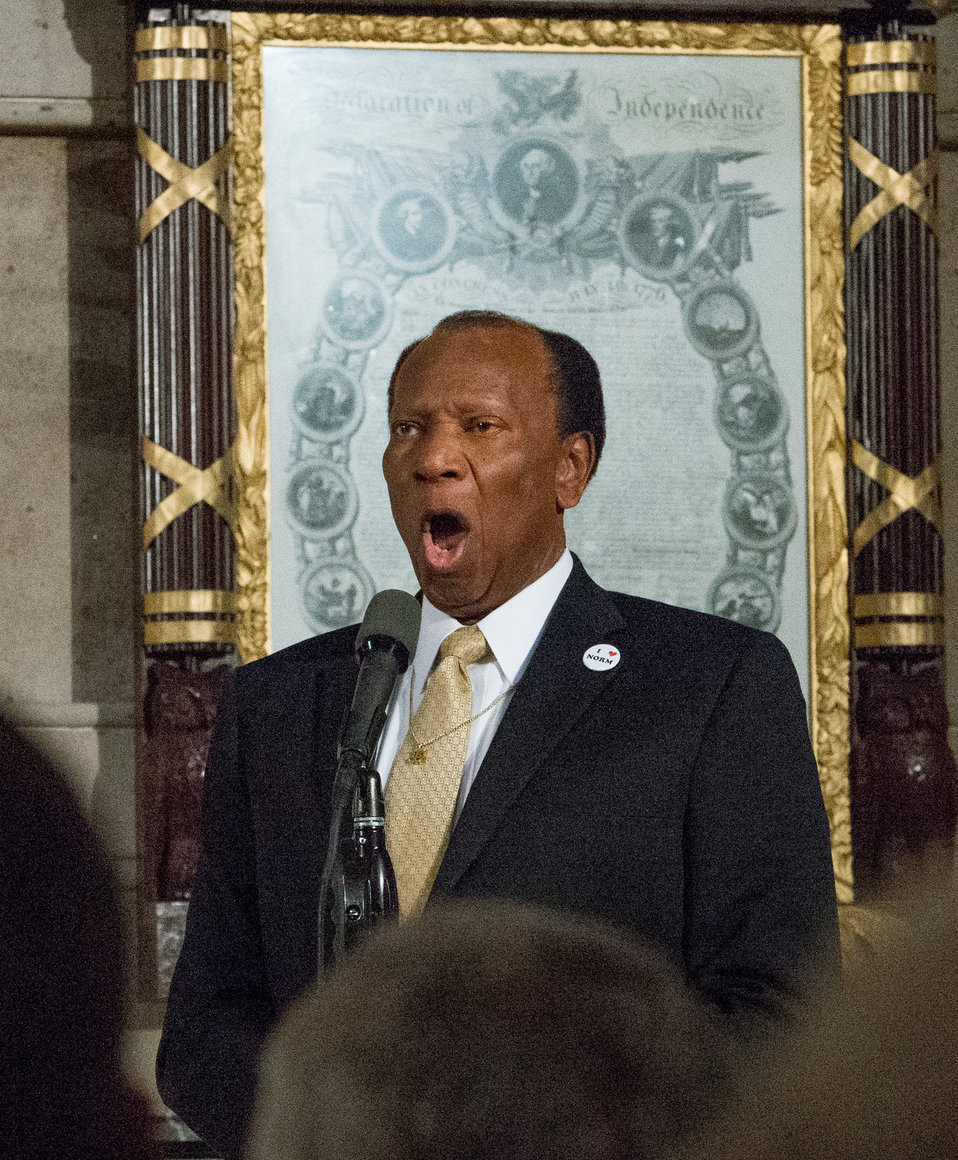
Mr. Simon Estes sings “Climb Every Mountain,” during the dedication of the Dr. Norman Borlaug statue in the National Statuary Hall at the U.S. Capitol in Washington, D.C. on Tuesday, Mar. 25, 2014.